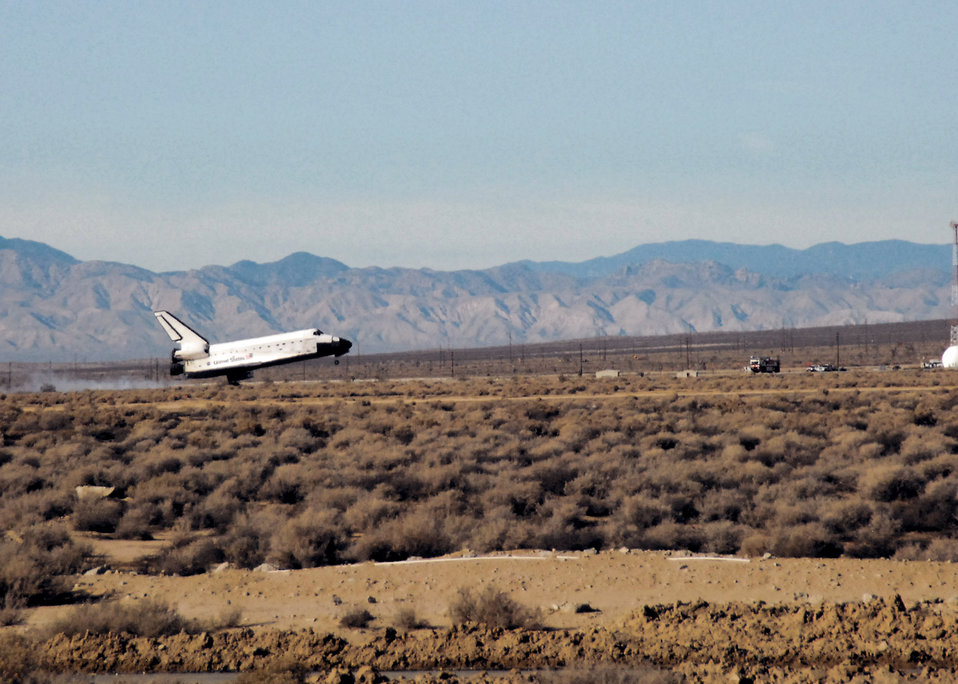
Space shuttle diverted, lands at Edwards

Space Shuttle Endeavour and its crew of seven astronauts touches down Nov. 30 at Edwards Air Force Base, Calif. This is the 52nd time NASA has used Edwards AFB as its alternate landing site.